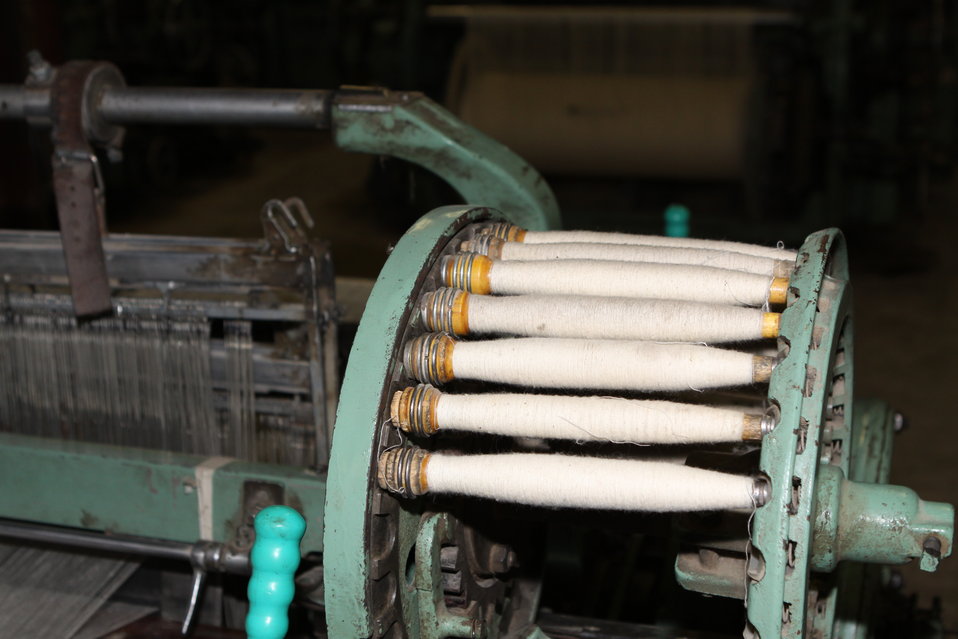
100525 Hirat Textile Company 747